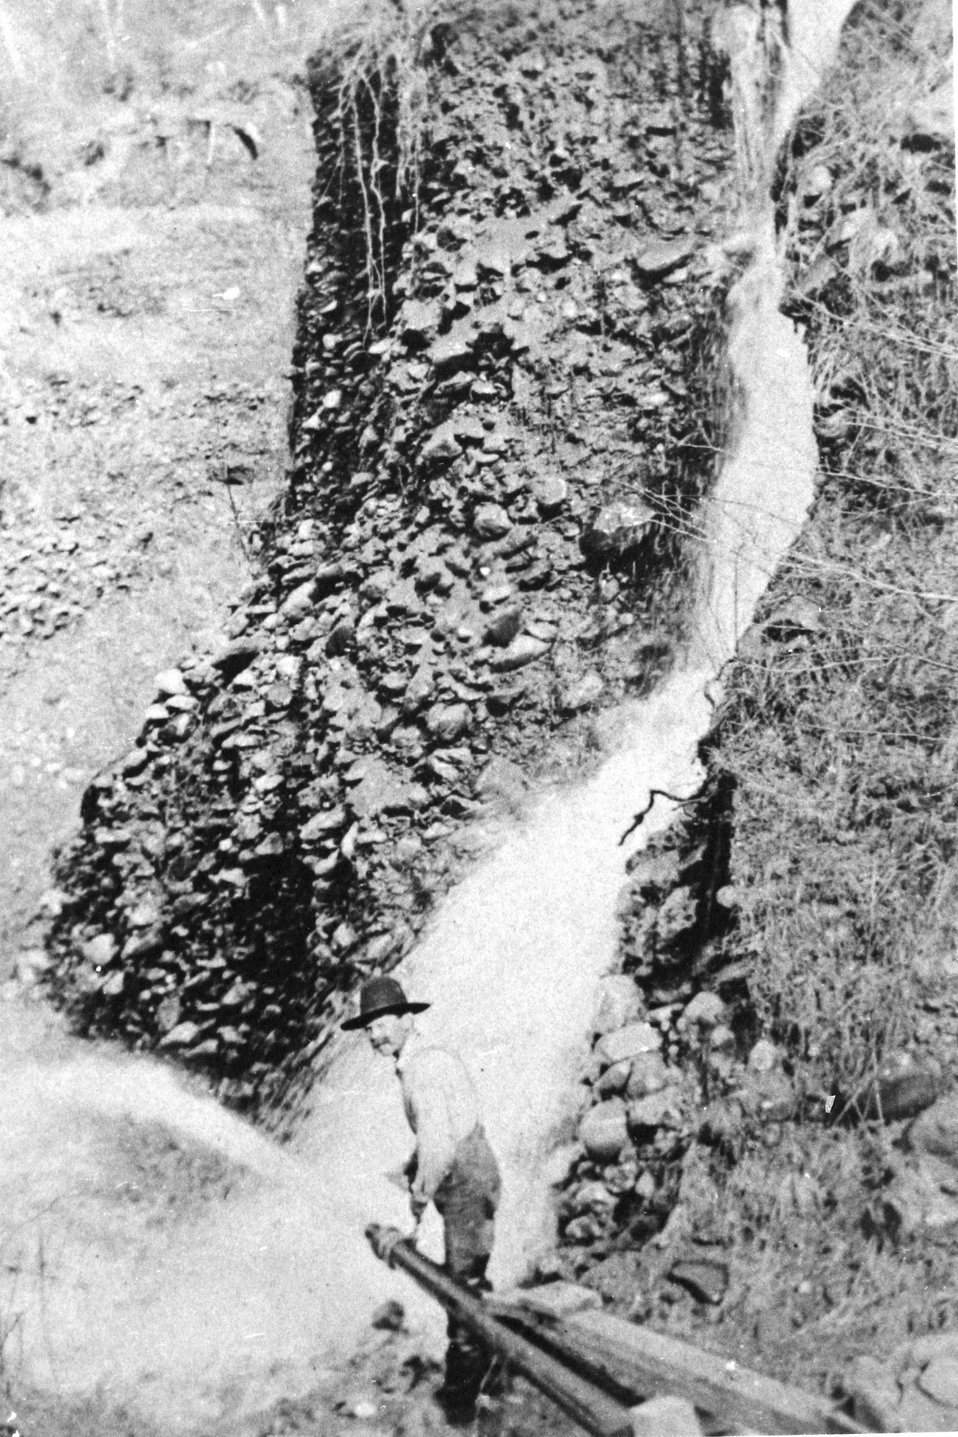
Gold mining.